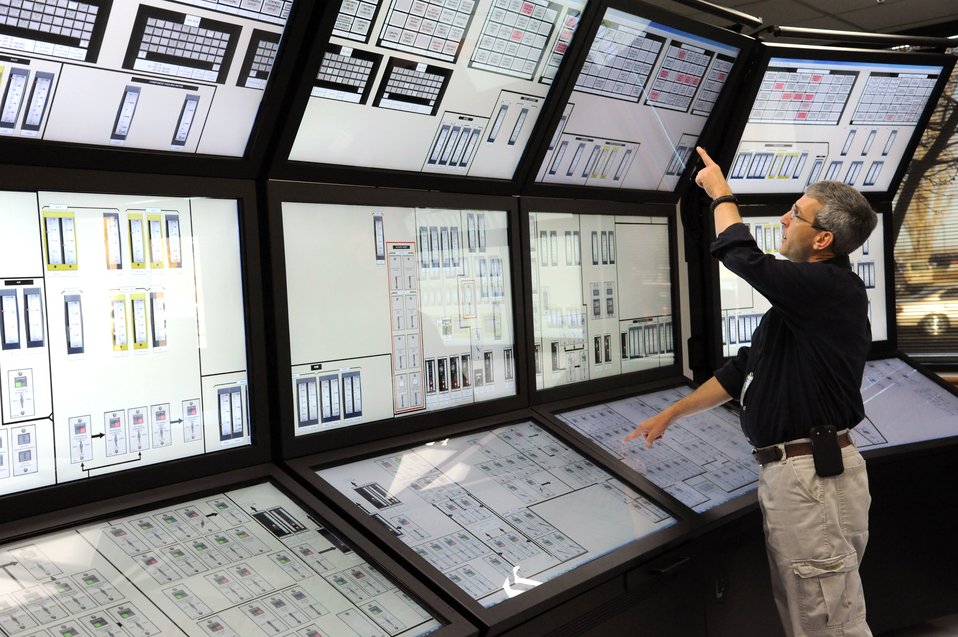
IDAHO NATIONAL LABORATORY'S HUMAN SYSTEMS SIMULATION LABORATORY INCLUDES 15 PANELS THAT ARE EASILY RECONFIGURED TO REPLICATE THE NATION'S COMMERCIAL PLANT CONTROL ROOMS FOR TRAINING AND MODERNIZATION.